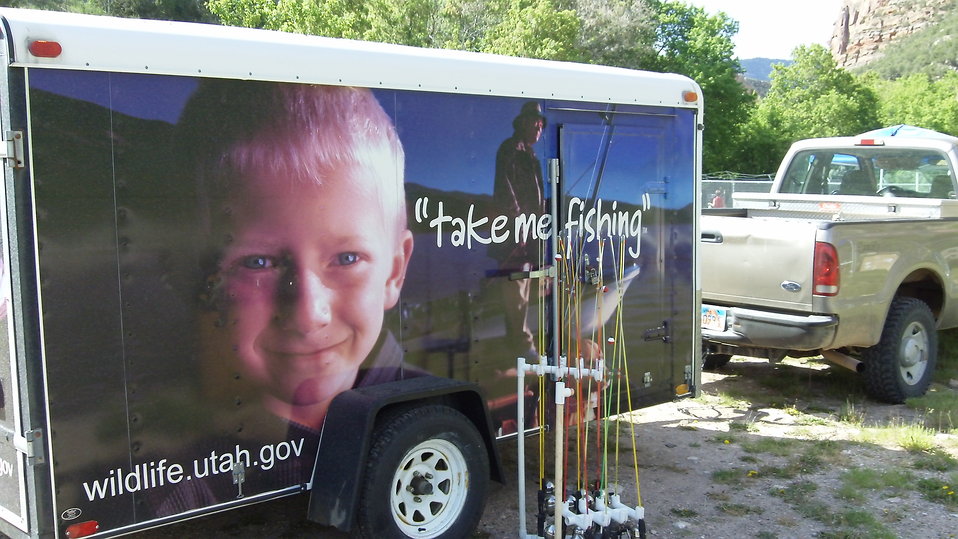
Utah Division of Wildlife Helps Out

On June 11, 2011, Jones Holes National Fish Hatchery held its annual Kids Free Fishing Day. Families came out to enjoy the great outdoors. Utah Division of Wildlife Resources brought a trailer and helped out at the event.